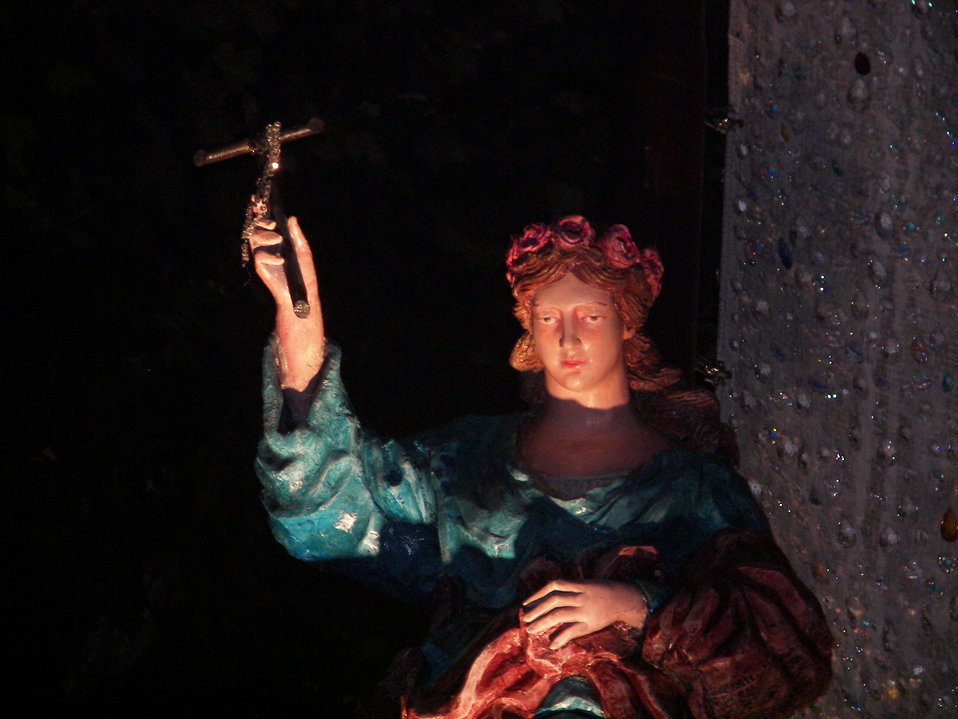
Italiano: Autore e fonte, Riccardo Spoto. Simulacro di Santa Rosalia, sul carro trionfale, nel festino 2007.